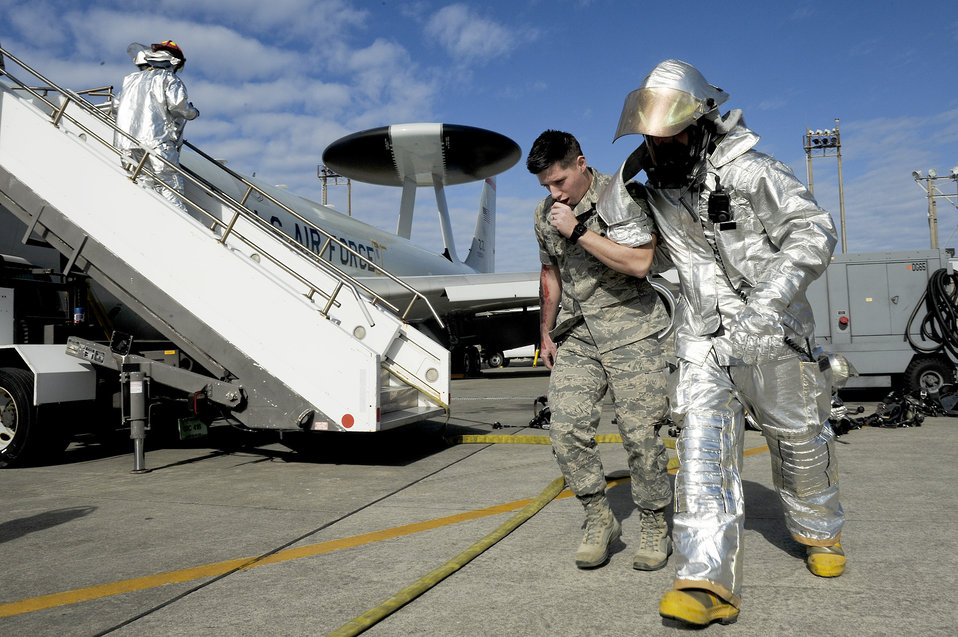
Take a deep breath

A firefighter from the 18th Civil Engineer Squadron helps a